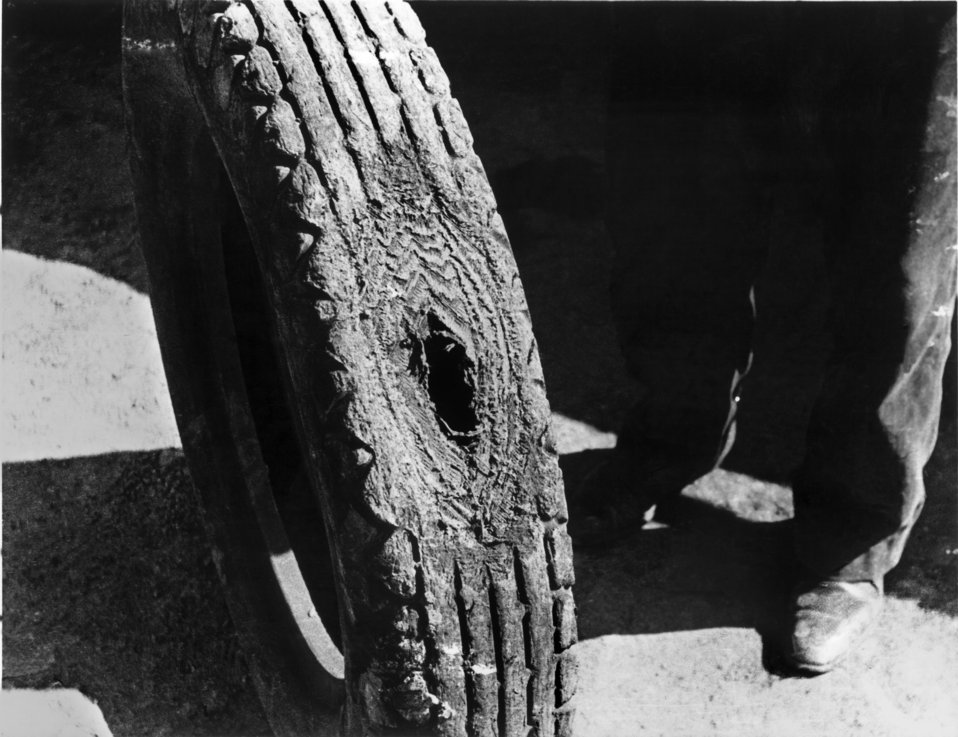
Worn Tire Oak Ridge

roll 221-4 DOE photo by Ed Westcott #43 4/6/44